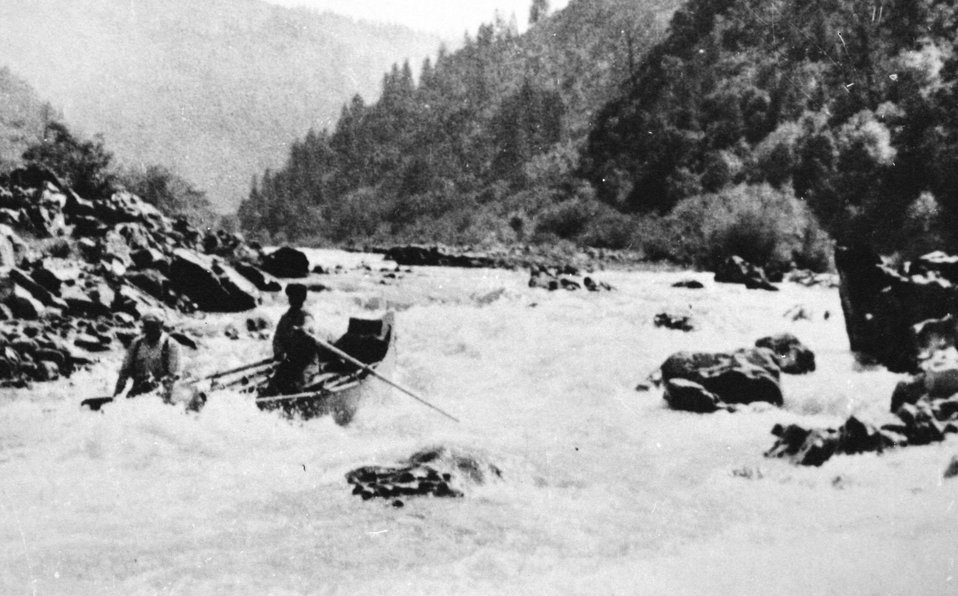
Wildcat rapids